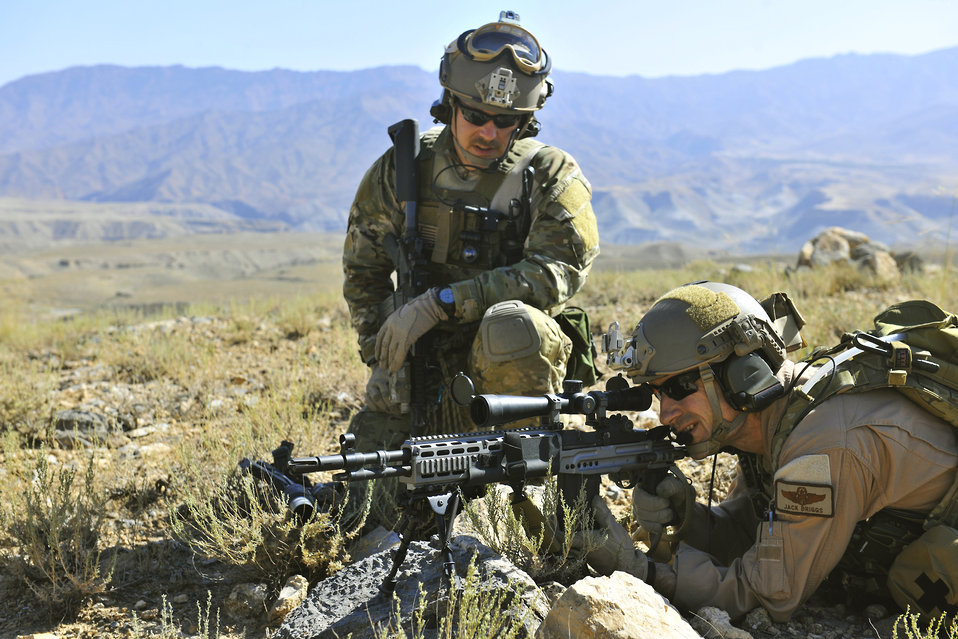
Pararescueman train to help save lives

Brig. Gen. Jack L. Briggs test fires the M14, an enhanced battle rifle during a training mission at Bagram Airfield, Afghanistan, Sept. 24, 2010. General Briggs is the commander of the 455th Air Expeditionary Wing.